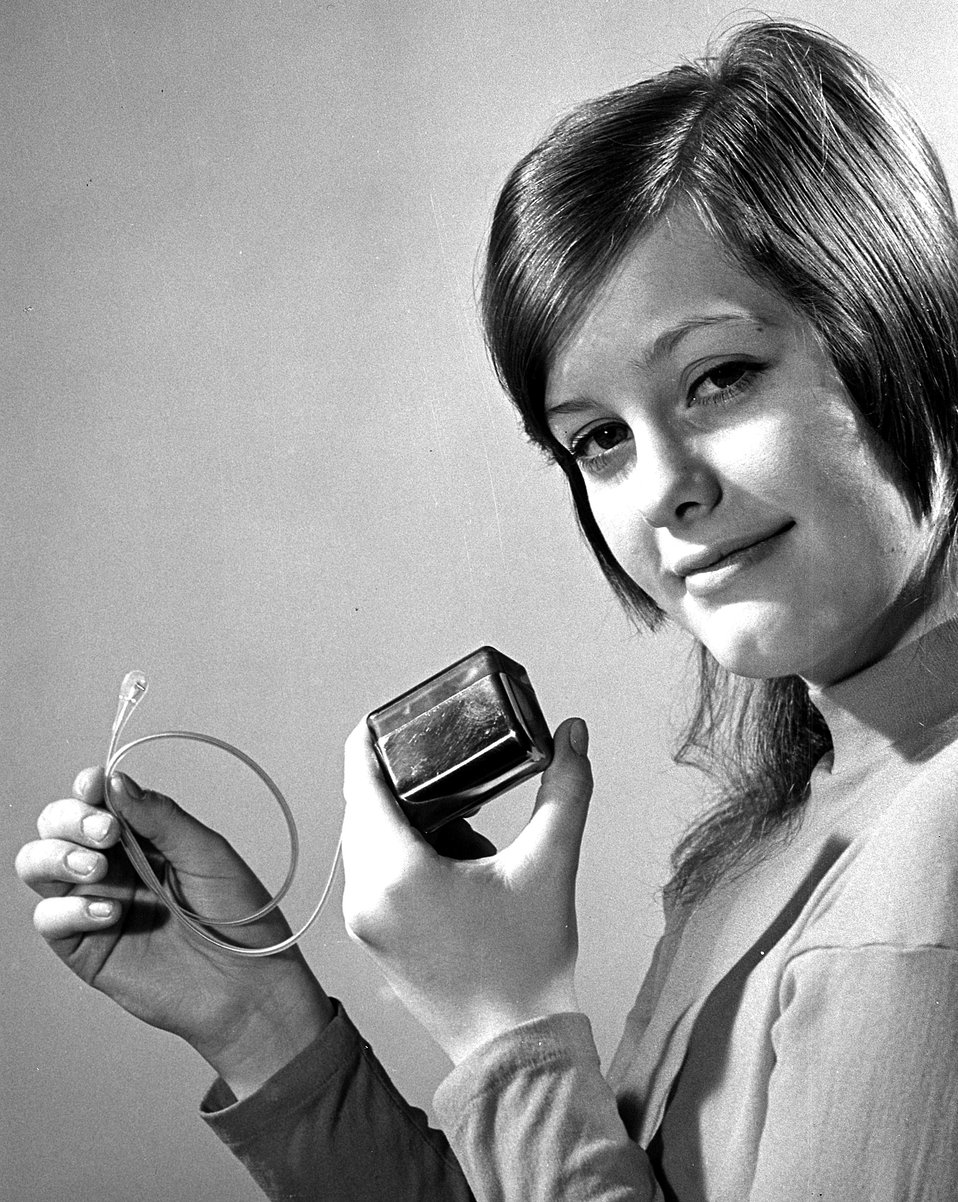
Gayle Hood displays model of nuclear-powered heart pacemaker developed for the Atomic Energy Commission by ARCO Nuclear Company, a subsidy of Atlantic Richfield Company. Circa 1973.